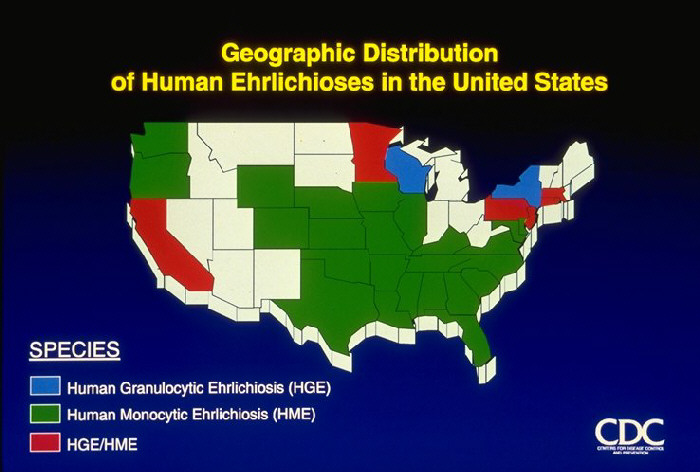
Geographic Distribution of Human Ehrlichioses in the United States, 1986-1996 (map)